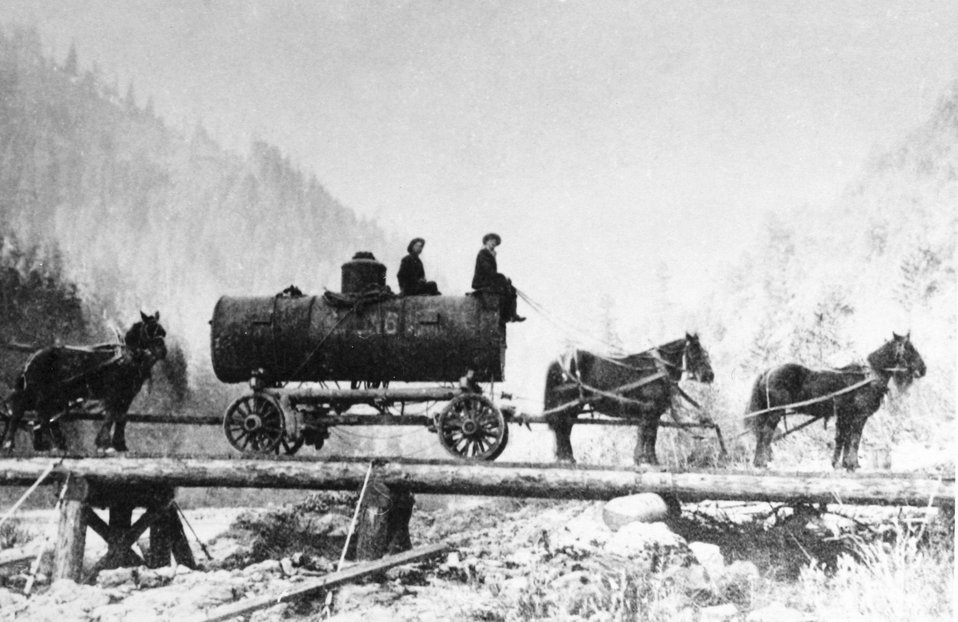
Hauling supplies to the Almeda Mine